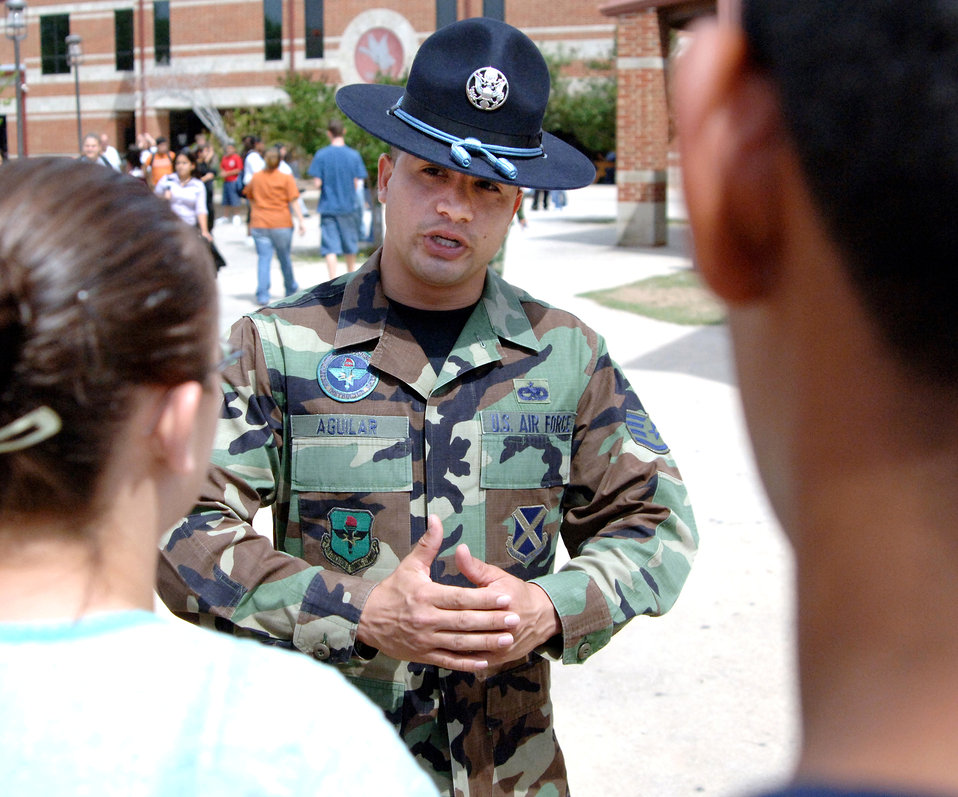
AF Recruiting

Military Training Instructor Staff Sgt. David Aguilar speaks to students and parents about experiences to be expected during basic training at a recruiting event at a San Antonio high school Tuesday, April 4, 2006. The event had video games and a semi-trailer with a short video shown inside about career opportunities and experiences in the Air Force.